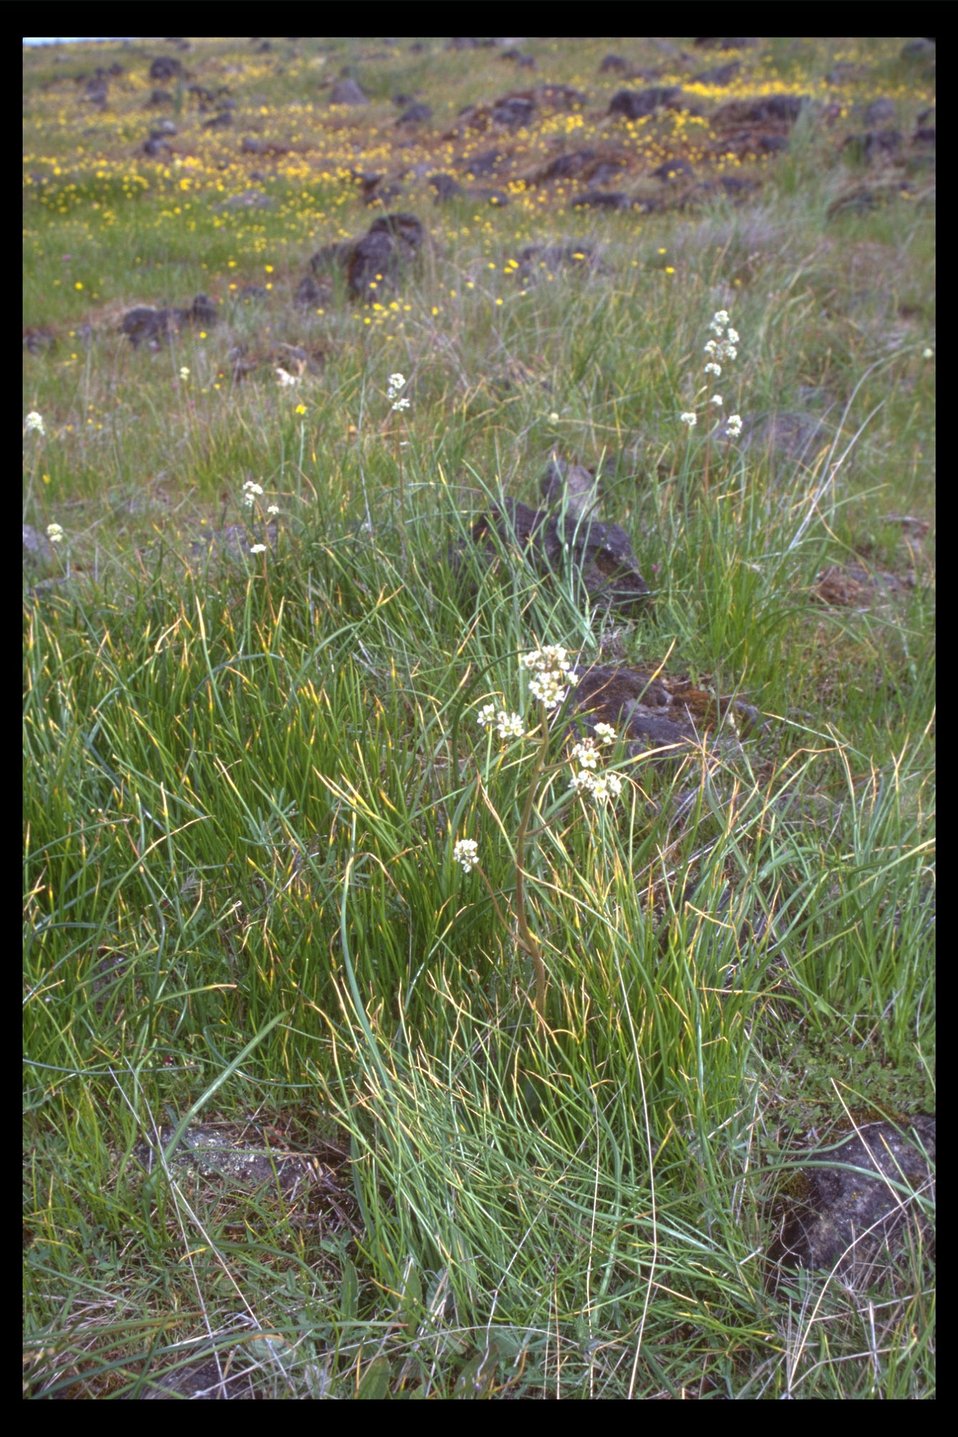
Oregon Saxifrage (Saxifraga oregana) found at Upper Table Rock.